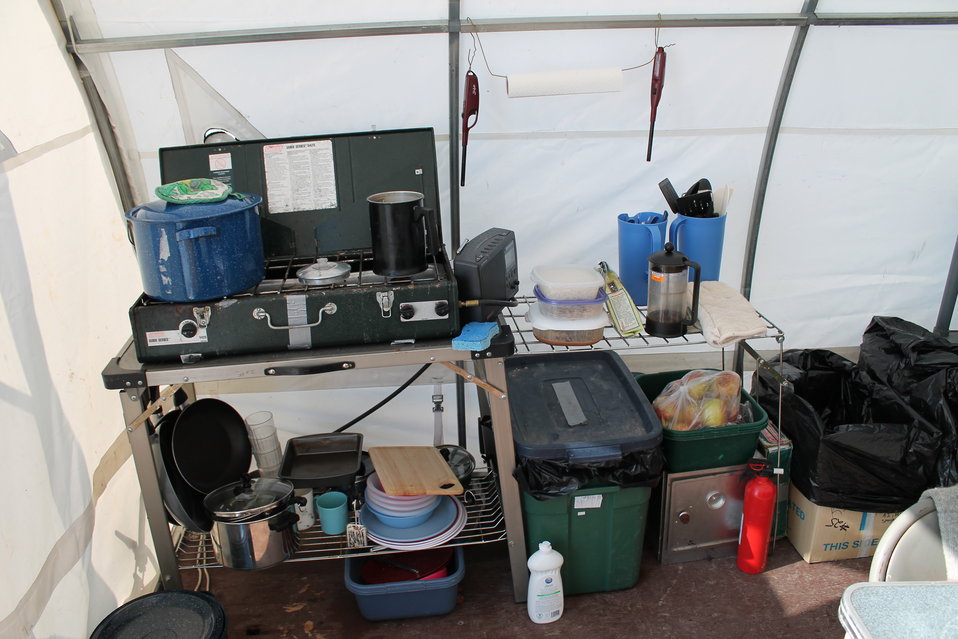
Field camp Kitchen

All you need is a propane powered stove and you can cook just about anything at field camp that you can at home.

USFWS Yukon Delta NWR